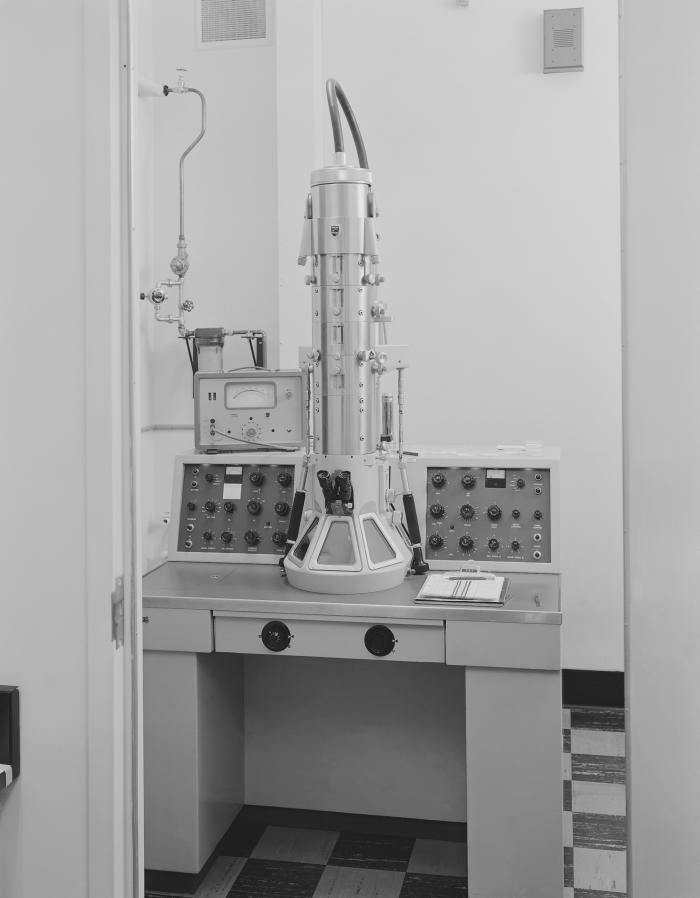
This historic 1965 image depicted a Centers for Disease Control's transmission electron microscope (TEM).